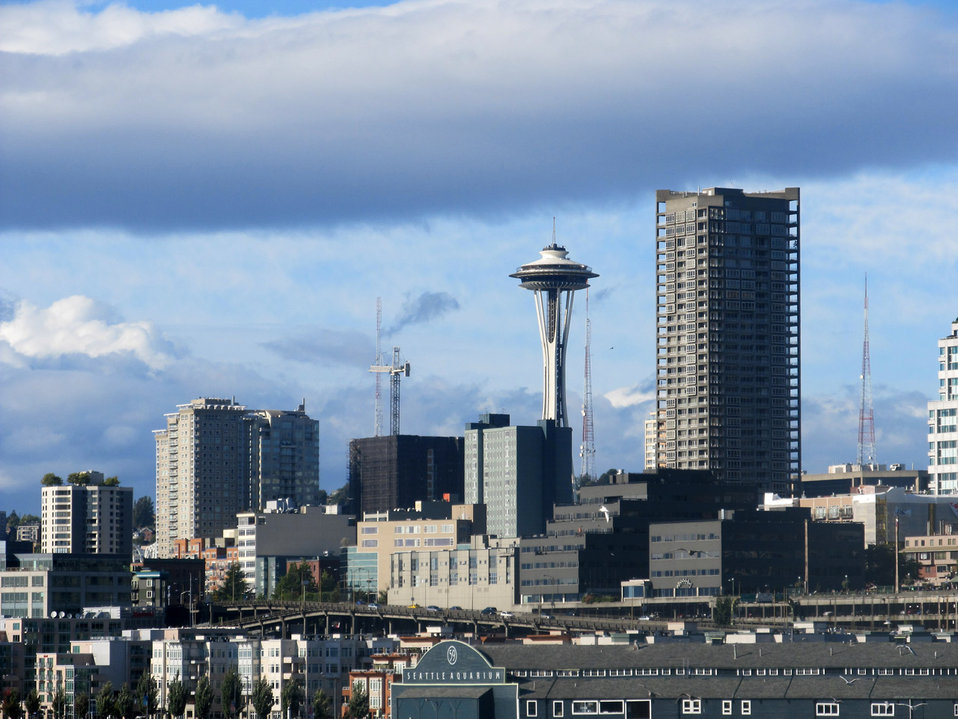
Seattle skyline

The skyline of seattle from the port.